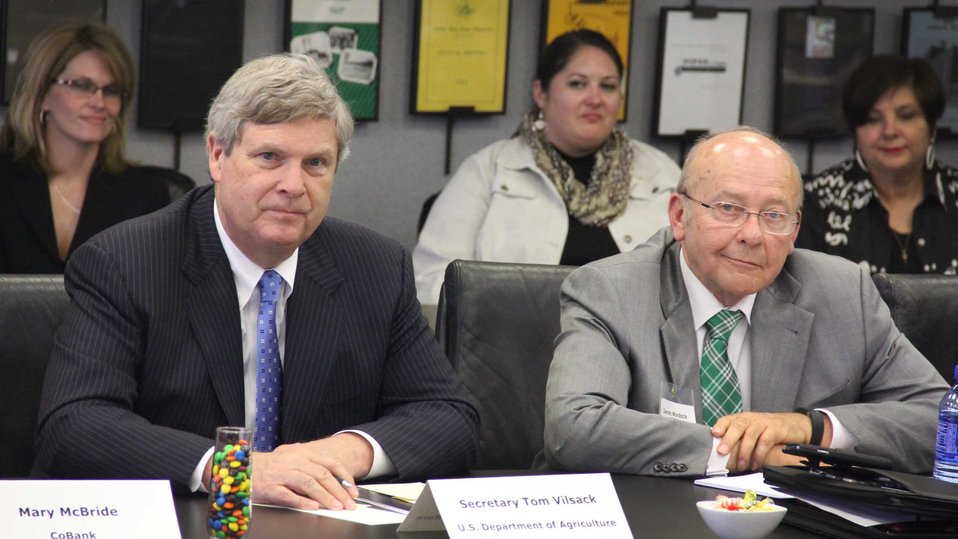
Agriculture Secretary Tom Vilsack announces the creation of a new investment fund that will help propel the growth of small businesses across rural America during a roundtable discussion with lenders and community leaders in Cedar Rapids, IA on Apr. 21, 2014. The new Rural Business Investment Company (RBIC) will be managed by Advantage Capital Partners with partners from eight Farm Credit institutions.